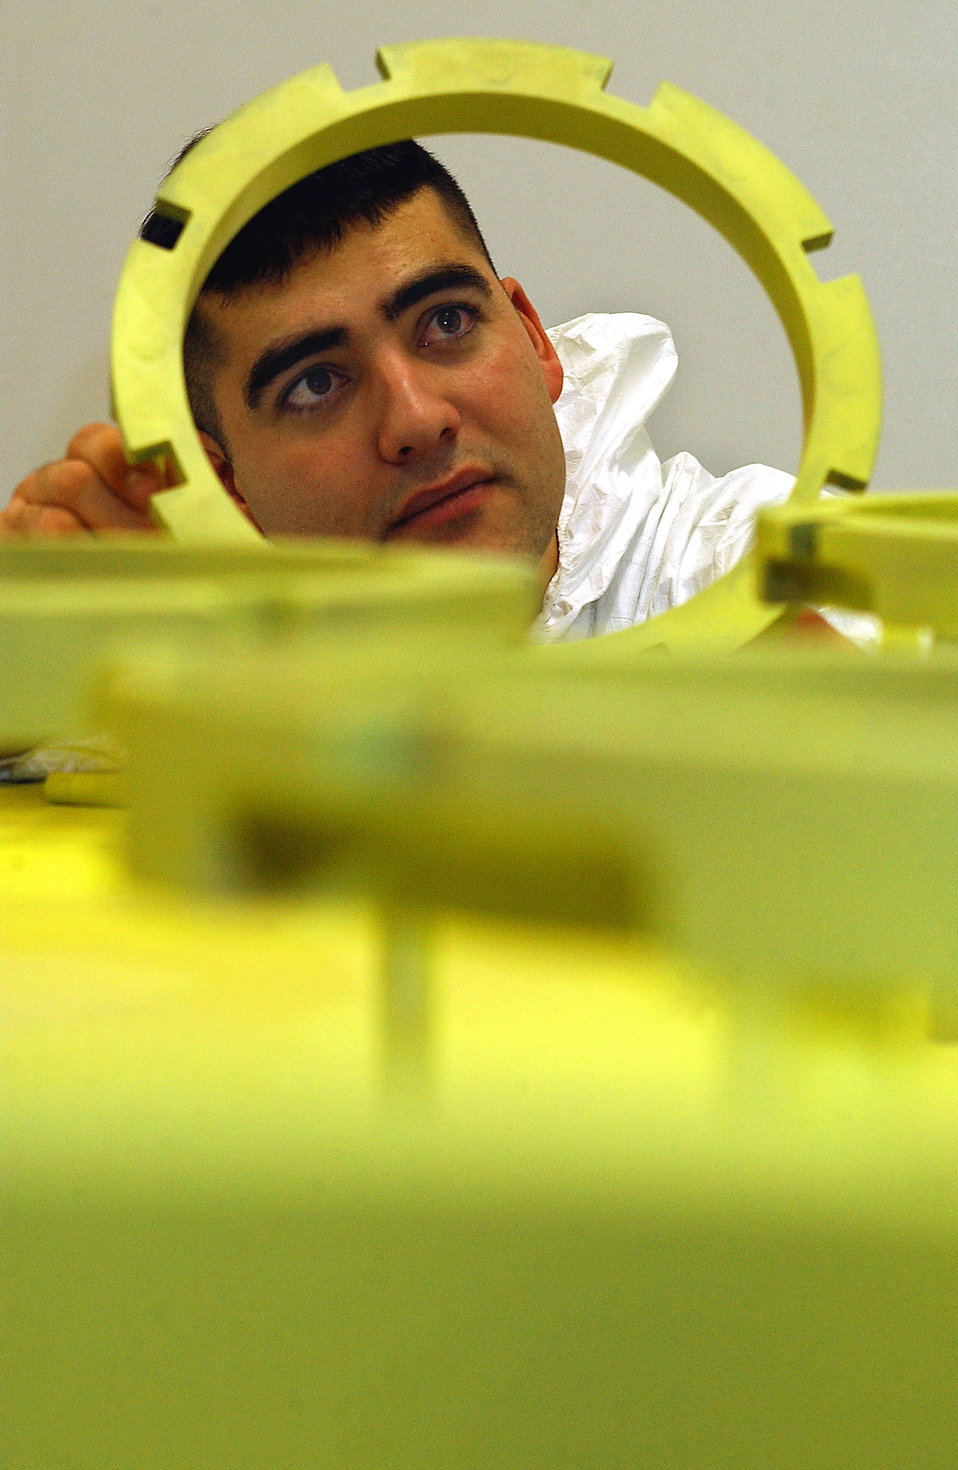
Lord of the rings

ROYAL AIR FORCE MILDENHALL, England -- Staff Sgt. Corey Wright inspects KC-135 Stratotanker brake rings to ensure an even coat of paint has been applied. Sergeant Wright is an aircraft structural maintainer on temporary duty here from Fairchild Air Force Base, Wash.